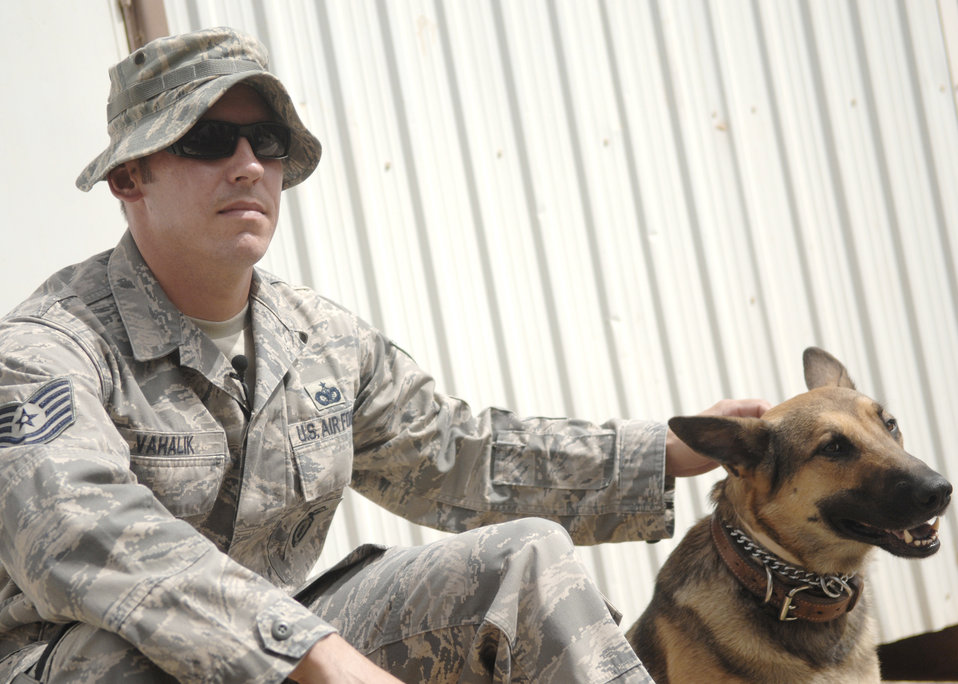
Servicemembers work 'out of the doghouse' at Joint Base Balad

Tech. Sgt. Jerome Vahalik IV pets Max, a military working dog, Aug. 28, 2009, at Joint Base Balad, Iraq. Max, a German shepherd, is trained to perform patrol and detection. Sergeant Vahalik is the 732nd Expeditionary Security Forces Squadron kennel master.